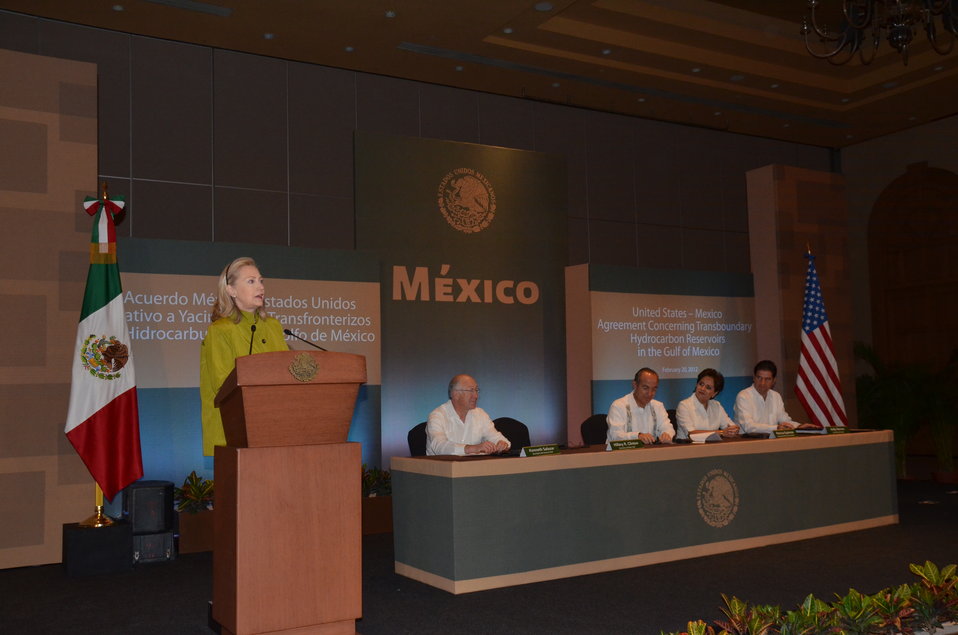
Secretary Clinton Delivers Remarks

U.S. Secretary of State Hillary Rodham Clinton delivers remarks before signing the United States-Mexico Agreement Concerning Transboundary Hydrocarbon Reservoirs in the Gulf of Mexico, in Los Cabos, Mexico, on February 20, 2012. Also pictured in the photo, left to right, are: U.S. Interior Secretary Ken Salazar, Mexican President Felipe Calderon, Mexican Foreign Minister Patricia Espinosa, and Mexican Secretary of Energy Jordy Herrera.